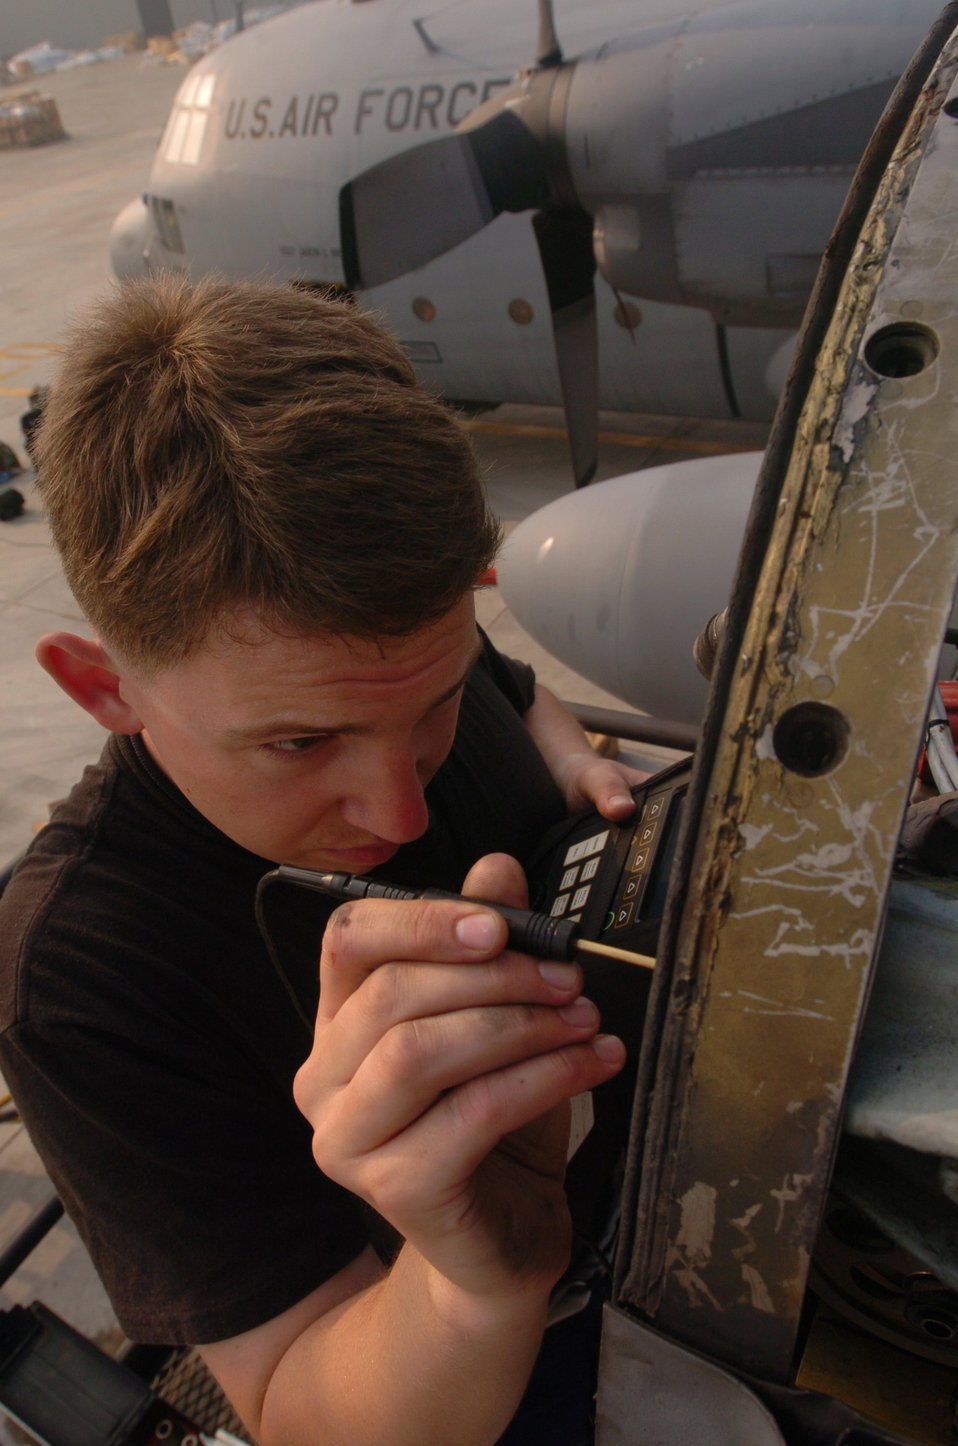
Easy does it...

BANGKOK, Thailand -- Staff Sgt. Neil Wilke inspects a propeller of a replacement engine here recently. The engine was replaced as a result of a fire while taking off from Dong Meung Royal Thai Air Force Base. Sergeant Wilke is with the 374th Aircraft Maintenance Squadron at Yokota Air Base, Japan.